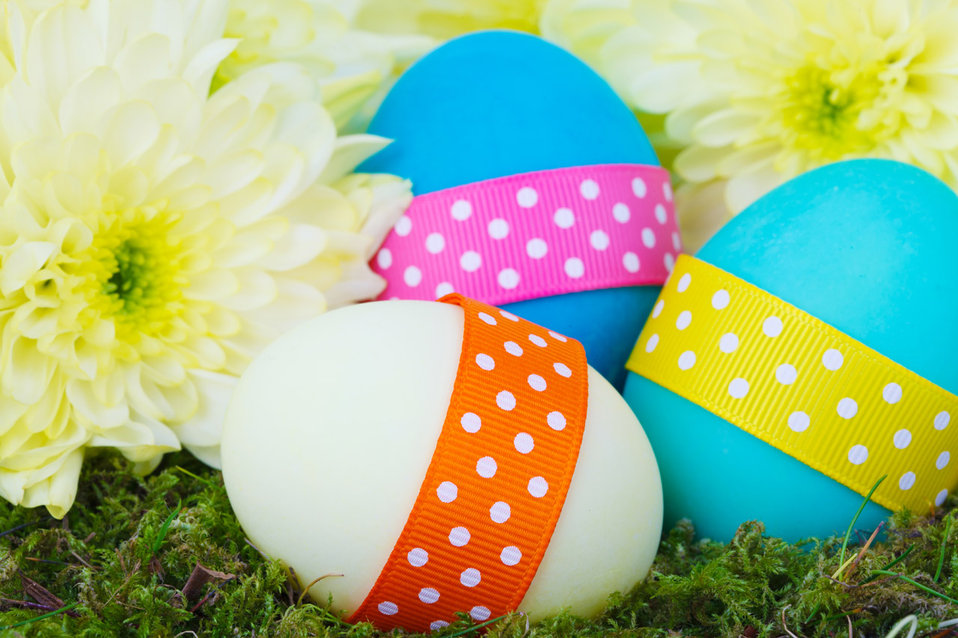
Easter eggs and flowers

Colorful easter eggs and yellow flowers.